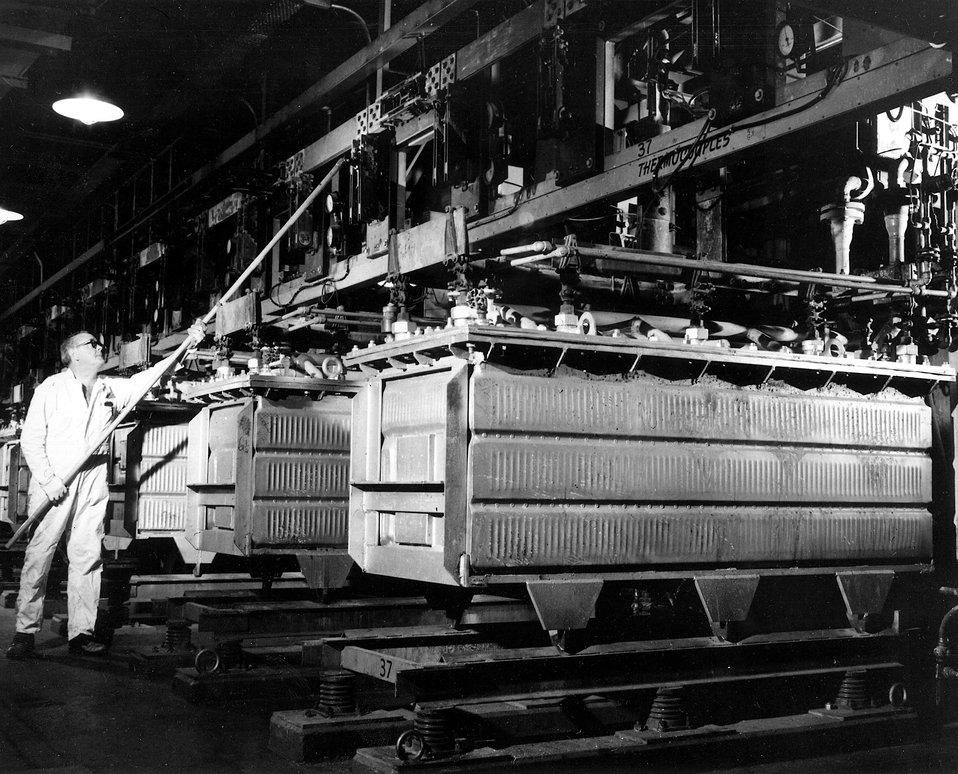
The Energy Research and Development Administration maintains a uranium feed material production facility at its Paducah (Kentucky) Gaseous Diffusion Plant. Circa 1972.